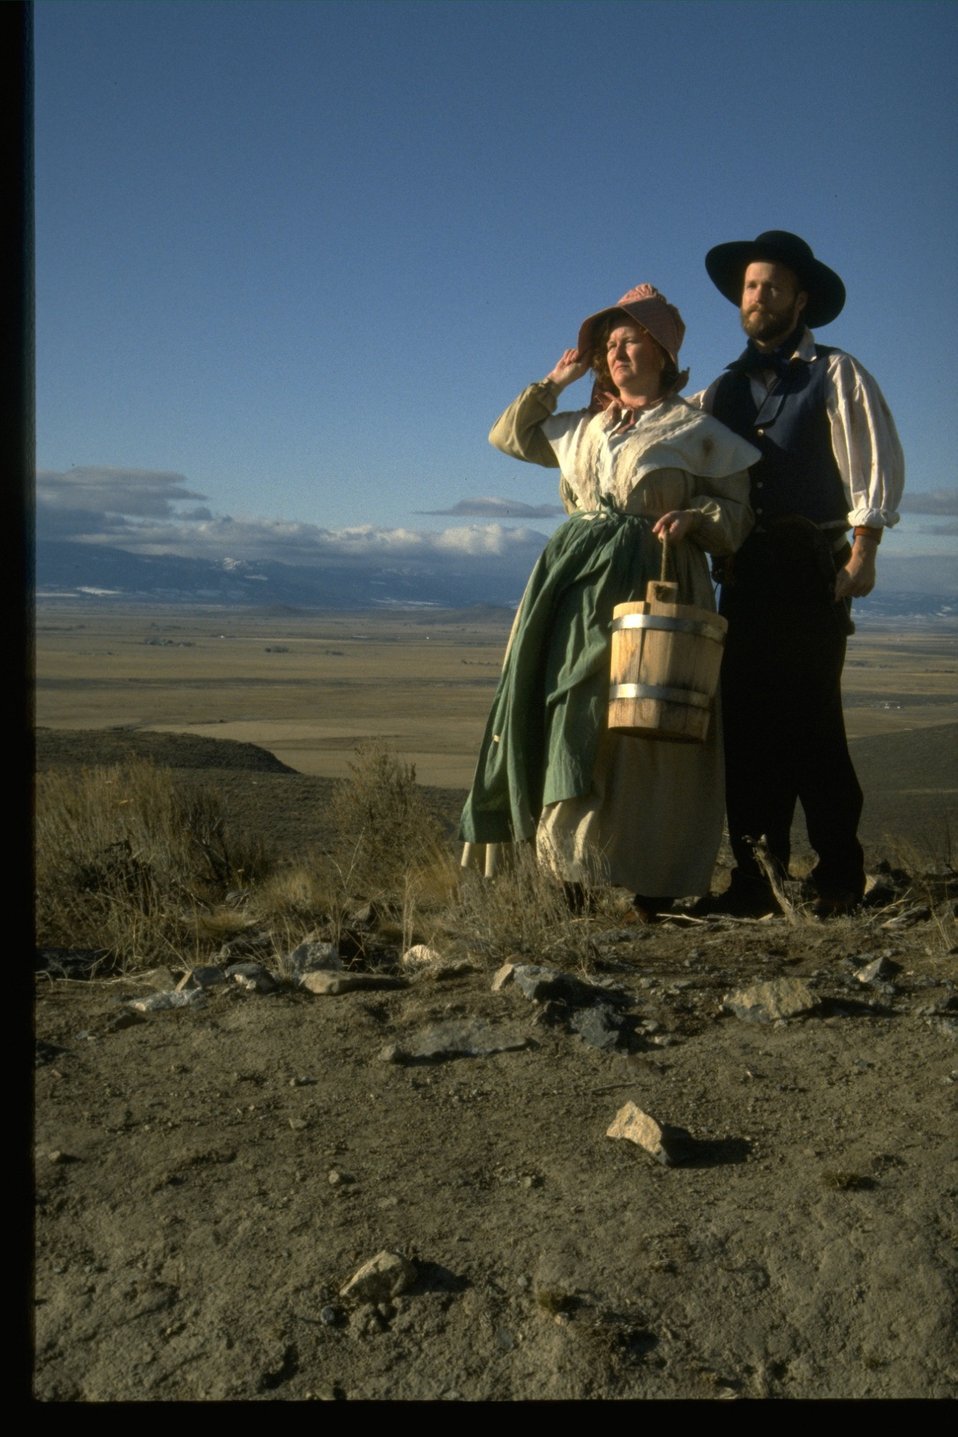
Pioneer couple (Pioneer re-enactors.)